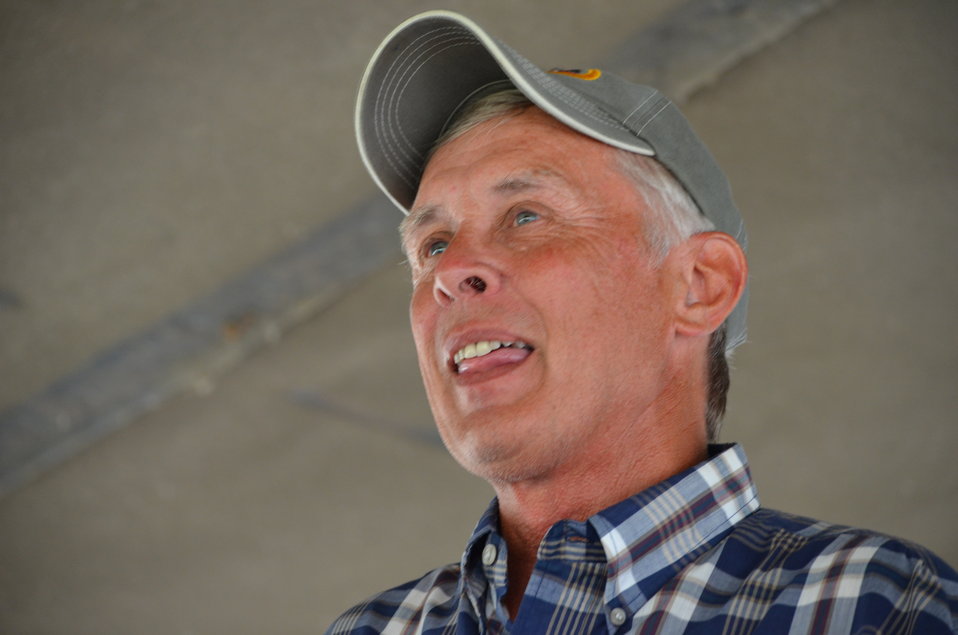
Billy Hildebrand, KFAN radio.